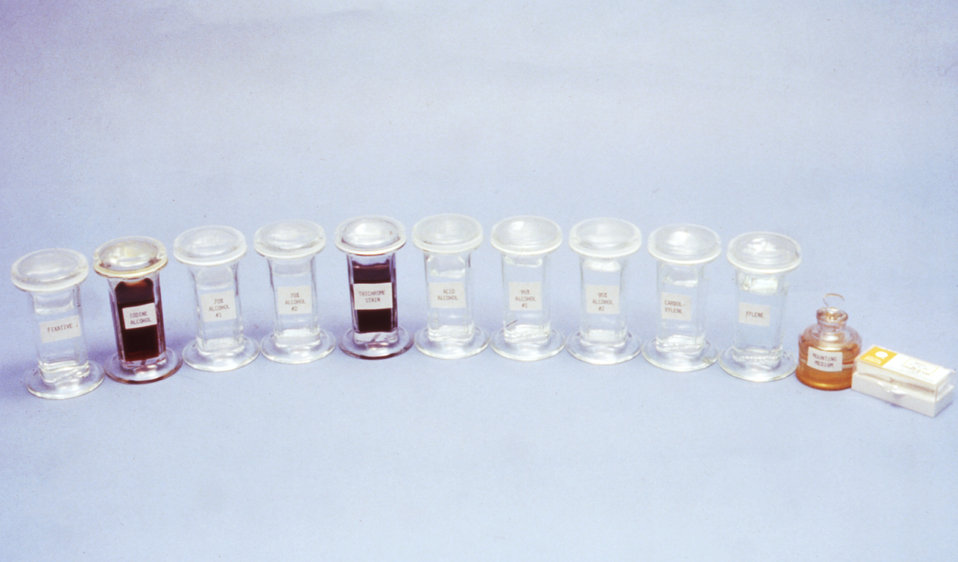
Pictured here is a set of Coplin jars used in the trichrome stain procedure.